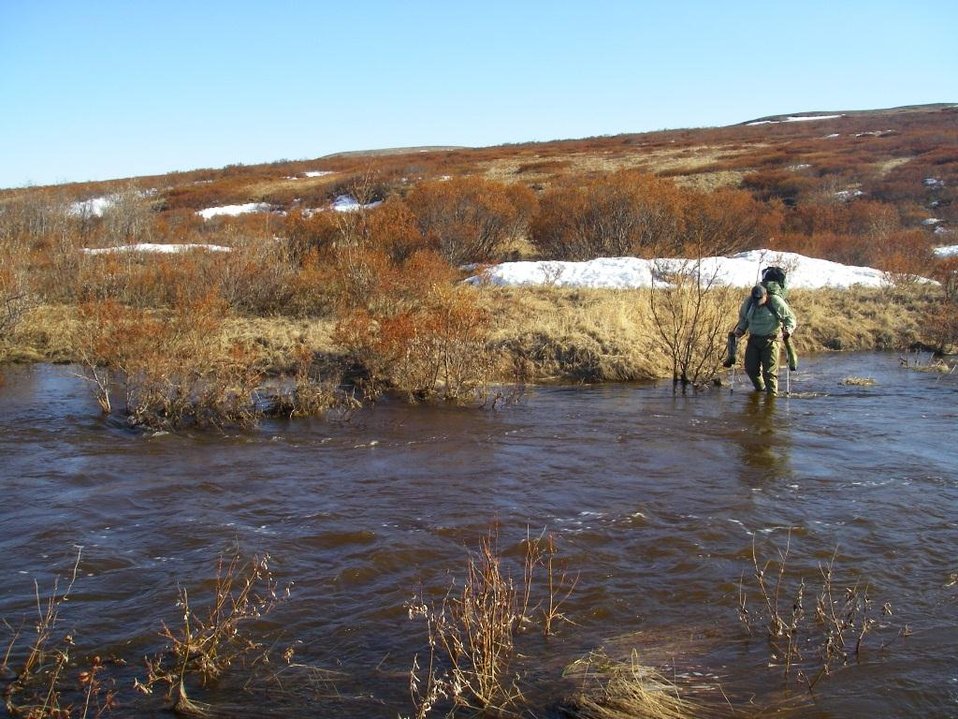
Stream crossing

Pikmiktalik River, Andreafsky Wilderness, Yukon Delta National Wildlife Refuge